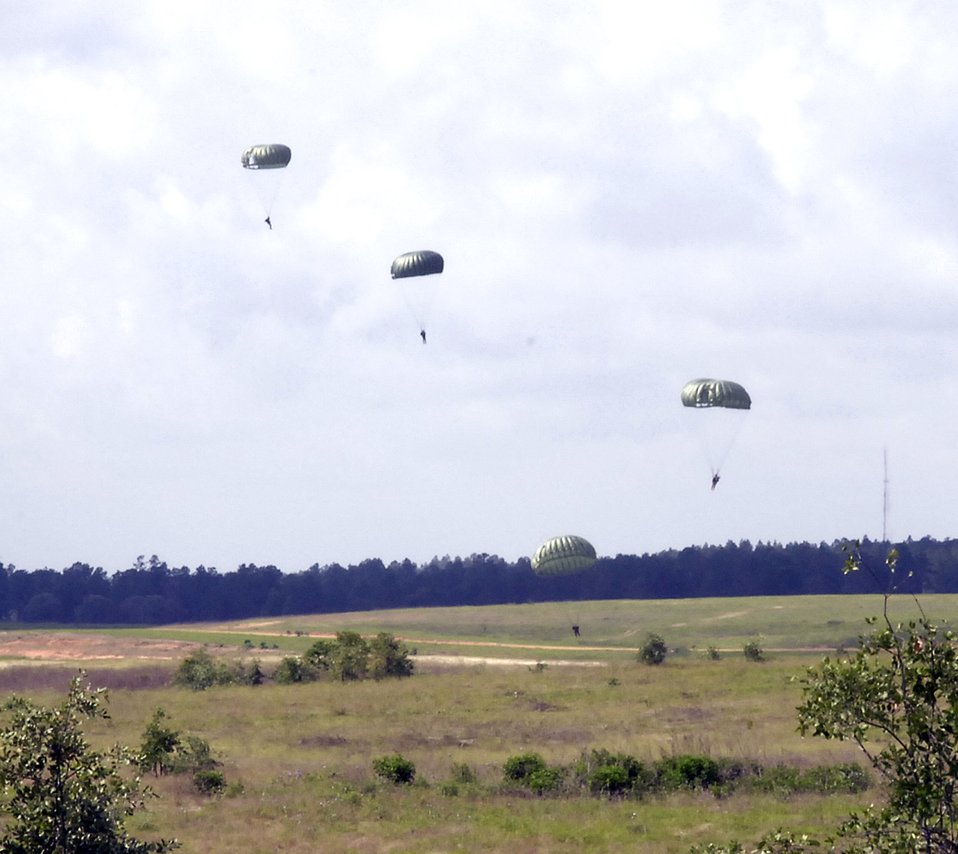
Special ops training

Special operations Soldiers prepare to land during static-line parachute training at the Joint Readiness Training Center at Fort Polk, La., on Wednesday, May 3, 2006. They were joined by an Air Force survival, evasion, resistance and escape specialist.